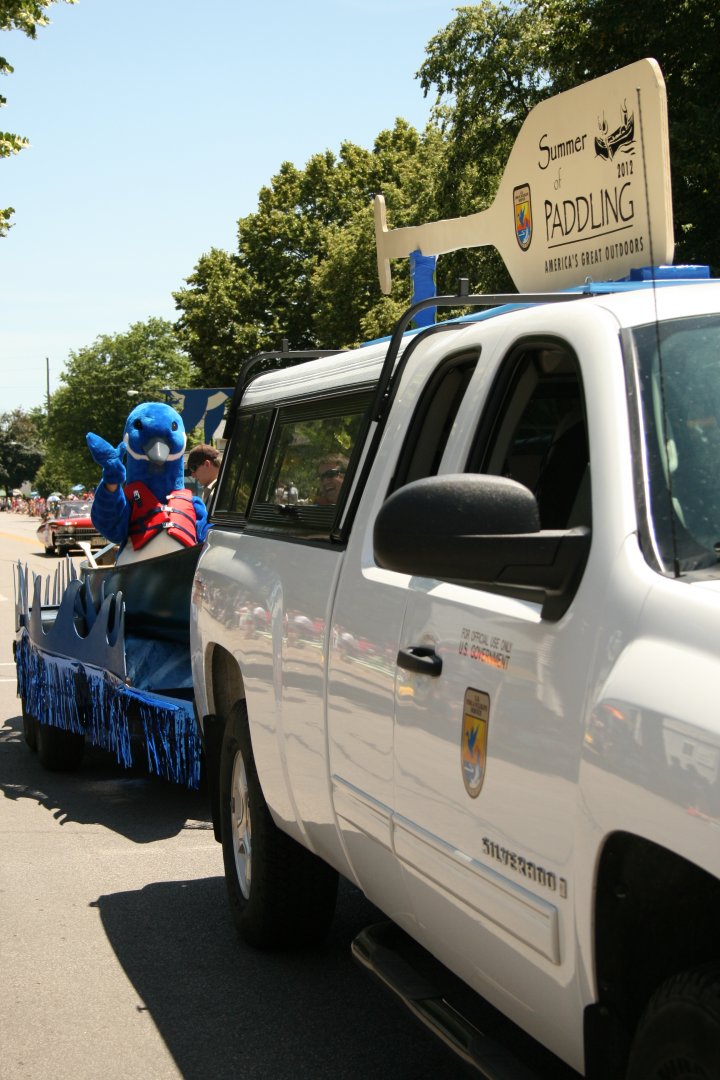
Giant paddle and float

“Webster” the blue goose rides in a canoe behind a giant paddle promoting The Summer of Paddling.